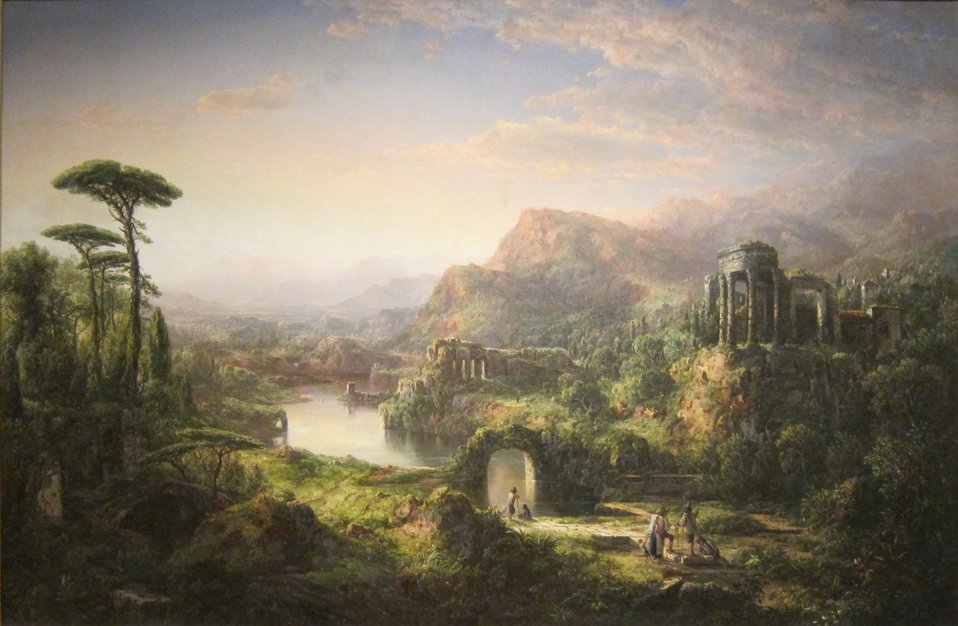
Dream of Italy, oil on canvas painting by William Louis Sonntag, 1859, Dayton Art Institute